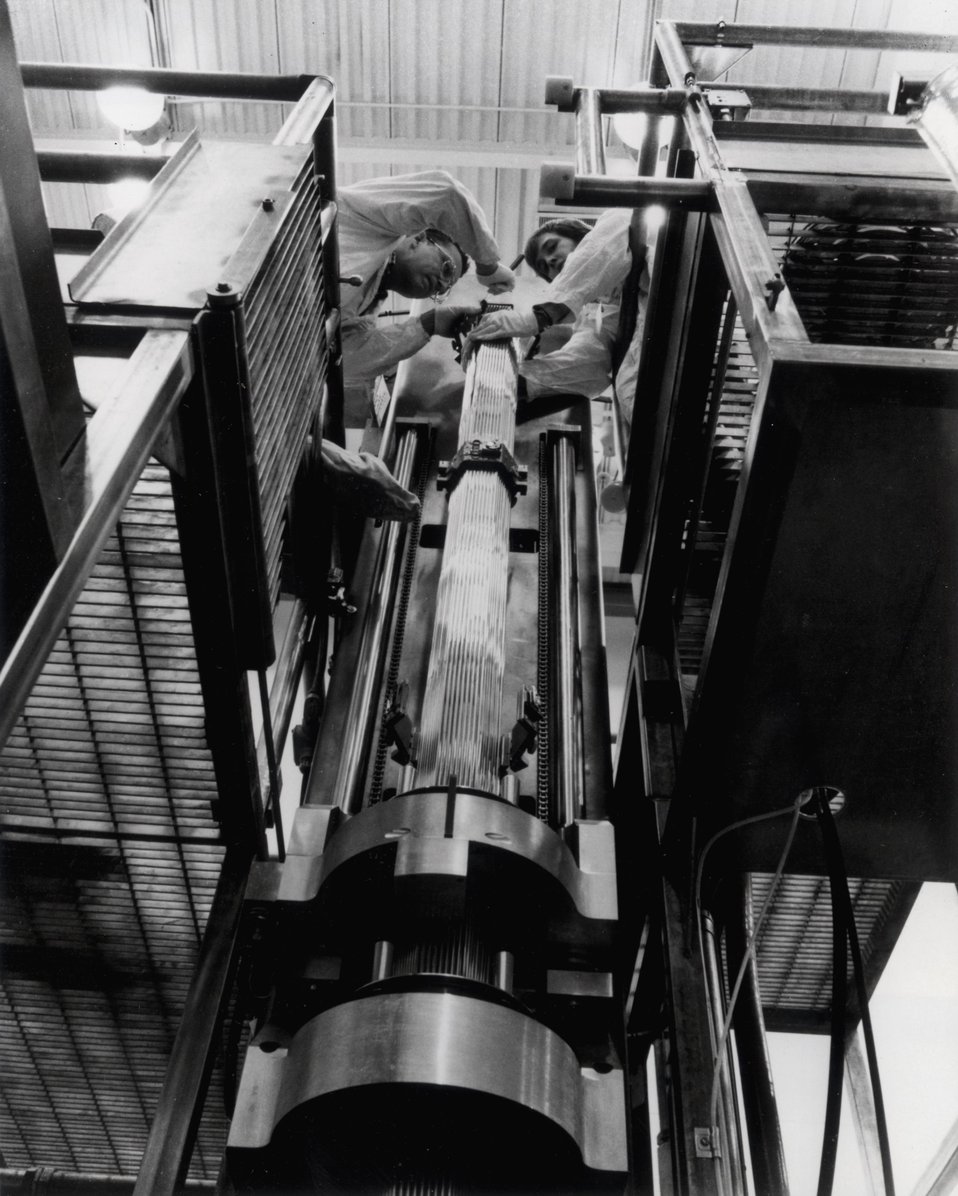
Rows of eight-foot-long fuel pins are arranged in a 217-pin hexagonal array by Westinghouse Hanford Company technicians Leroy Southam, left, and Duverne Dunnum. Circa 1977.